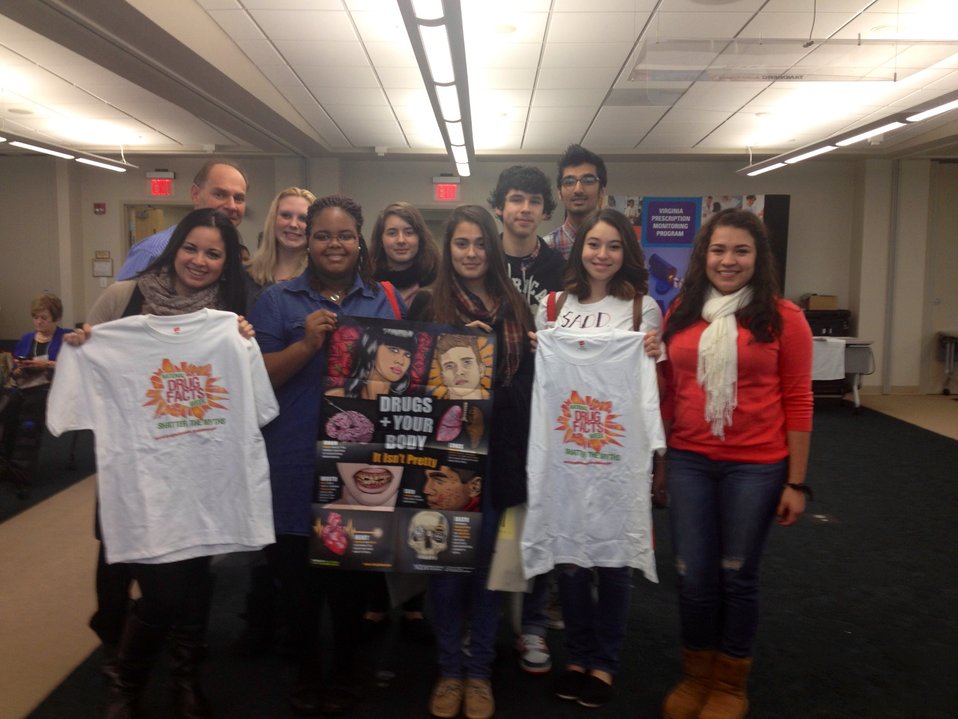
GarField High School SADD club